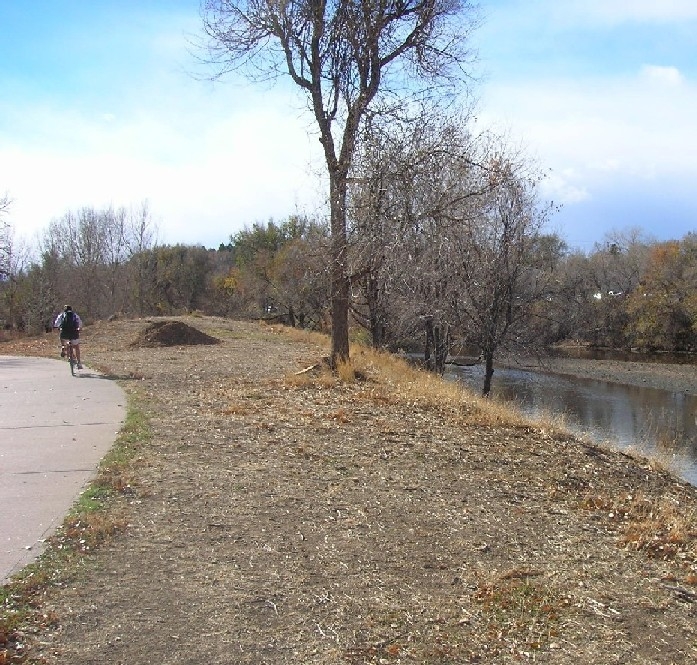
Overland Pond Park After

Restoration project at Overland Pond Park. Banks of the South Platte River in southwest Denver, Colorado after the removal of invasize Siberian elm trees. The main goals of the project are to enhance migratory bird habitat & promote environmental education.